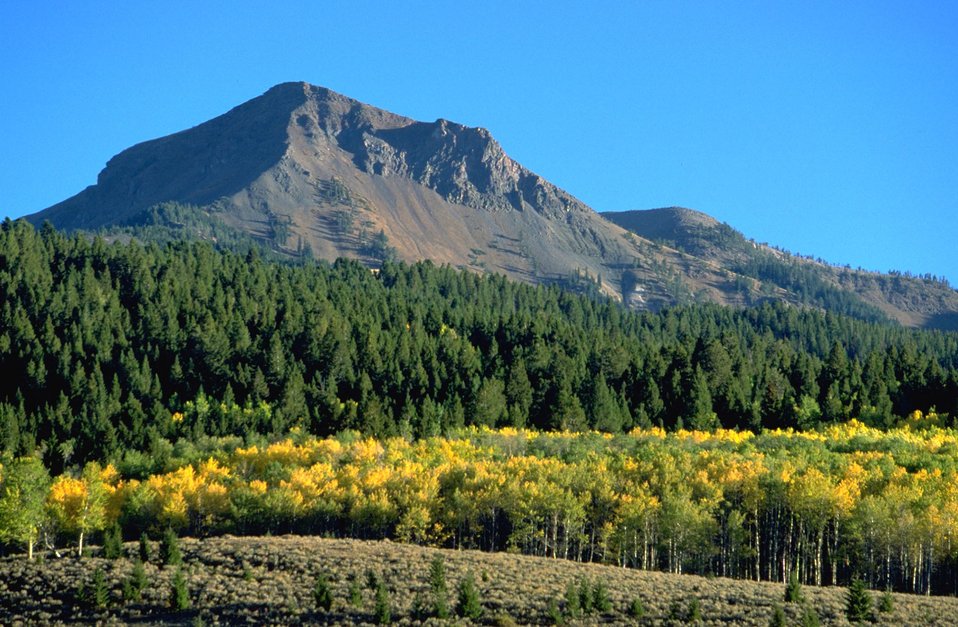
Baldy Mountain in the Centennial Range with forrested uplands and aspen grove in the foreground